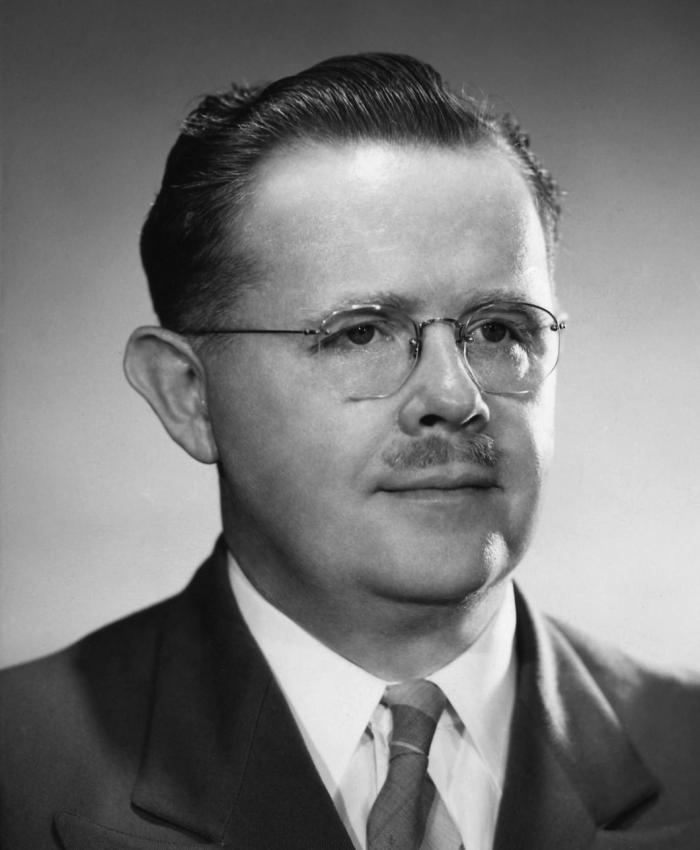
Justin M. Andrews, Sc.D., Chief, CDC, 1952 - 1953.